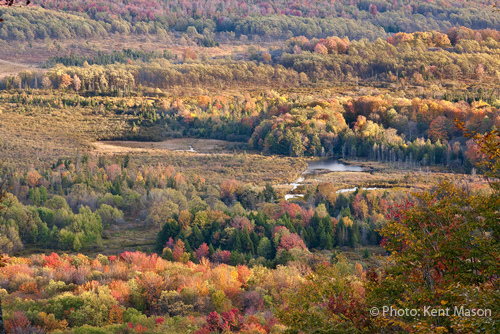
Balsam Fir on North Branch of Blackwater River

A grouping of balsam fir stand in contrast to fall's changing colors.